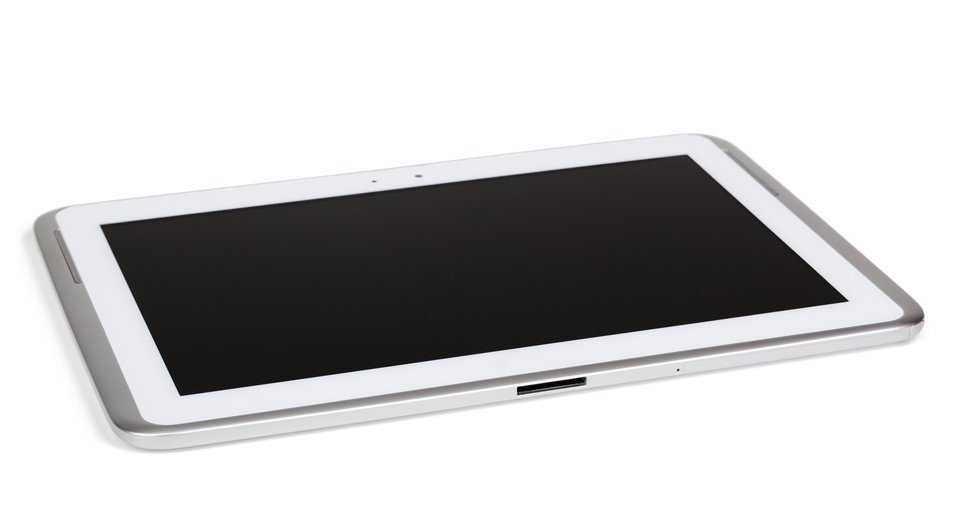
Tablet isolated

White tablet isolated on white background.